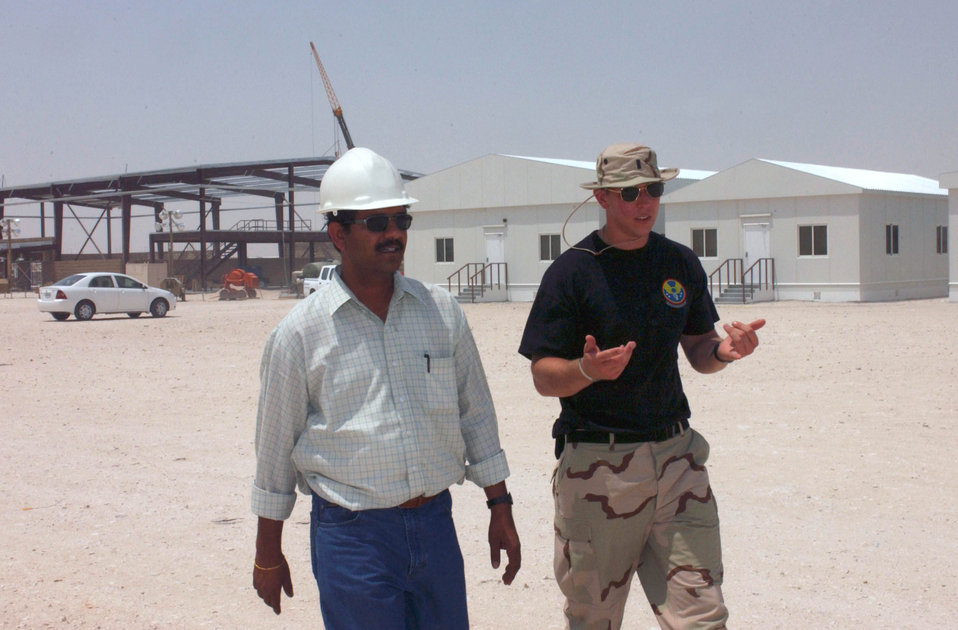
Thomas

AL UDEID AIR BASE, Qatar -- First Lt. Steven Thomas (right) works closely with local contractors including N. Rajiv Shanker. Expeditionary Village is being built to house at least 5,500 airmen at two per room. Besides living quarters, construction projects include a new gymnasium, theater, chapel and base exchange with other amenities.